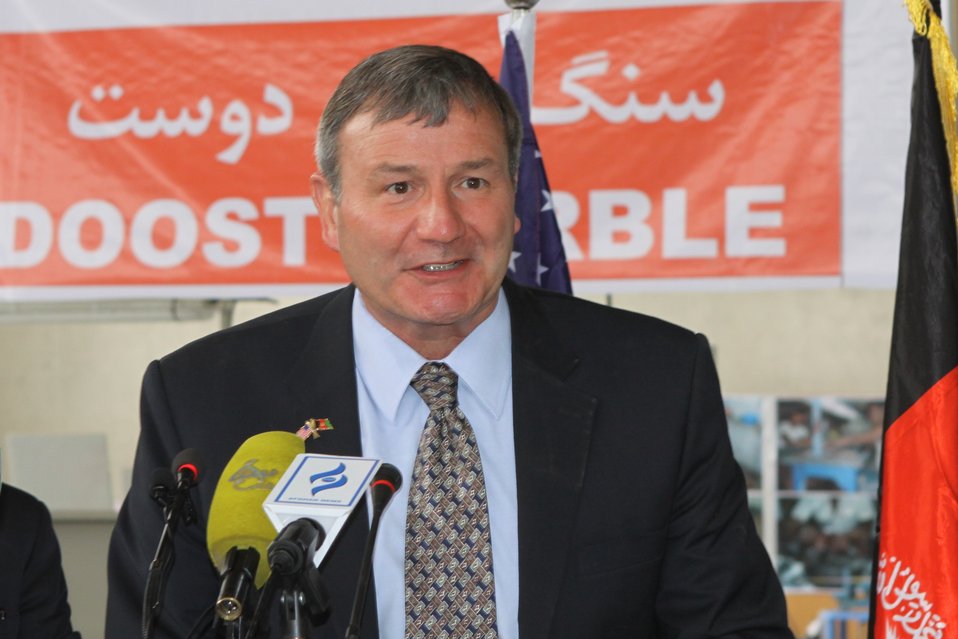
100525 Hirat Marble Conference 201